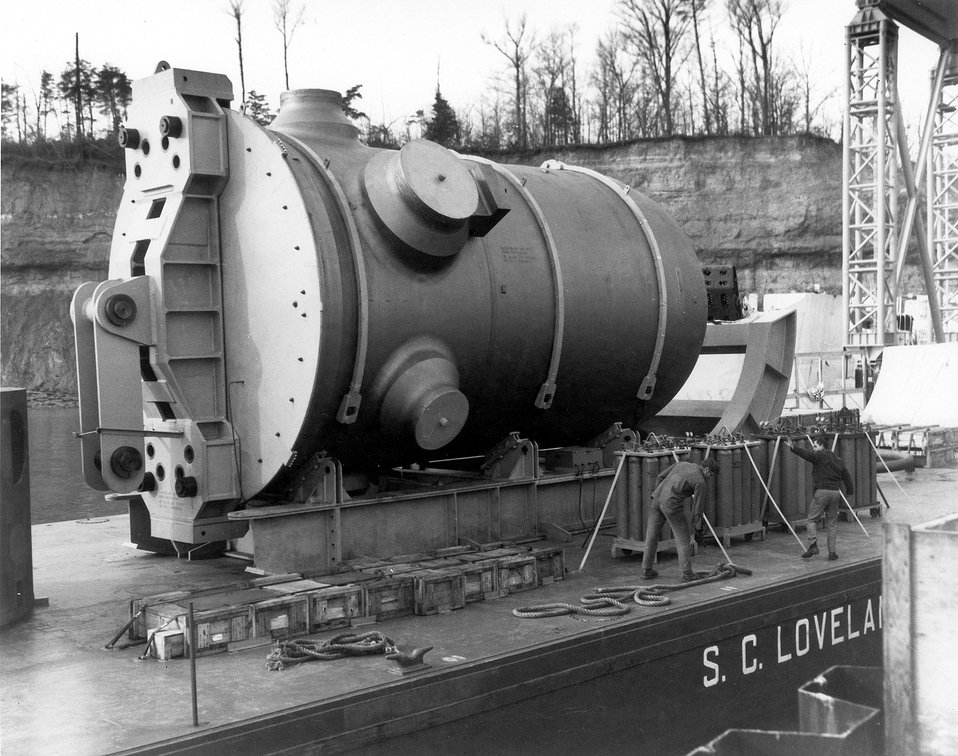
Arrival of the reactor vessel for the number one unit of Baltimore Gas and Electric's Calvert Cliffs Nuclear Power Plant at the barge dock. Circa 1971.